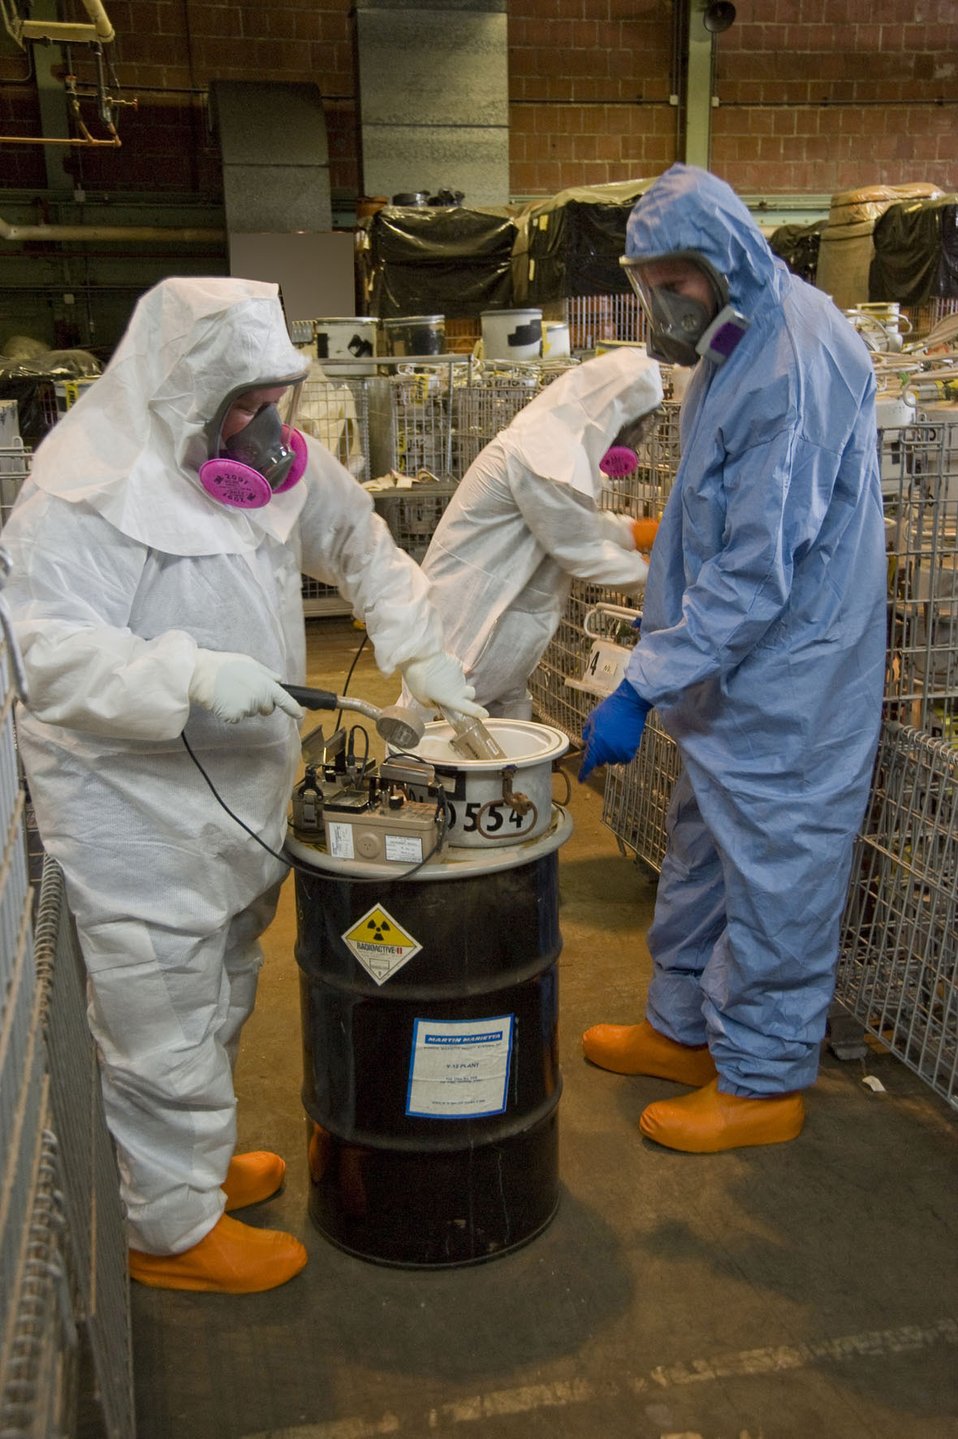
Skilled Workers Bruised by Recession Find New Start in Oak Ridge Recovery Act Work

Recovery Act workers at Alpha 5 at the Y-12 National Security Complex at Oak Ridge, Tenn., survey waste as part of the characterization process to determine its proper disposition path.